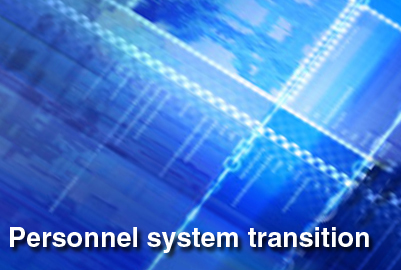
Spring to mark start of personnel system transition

Defense Department officials here are on track to transition the majority of its more than 220,000 civilian employees out of the National Security Personnel System by Sept. 30, more than a year ahead of deadline.